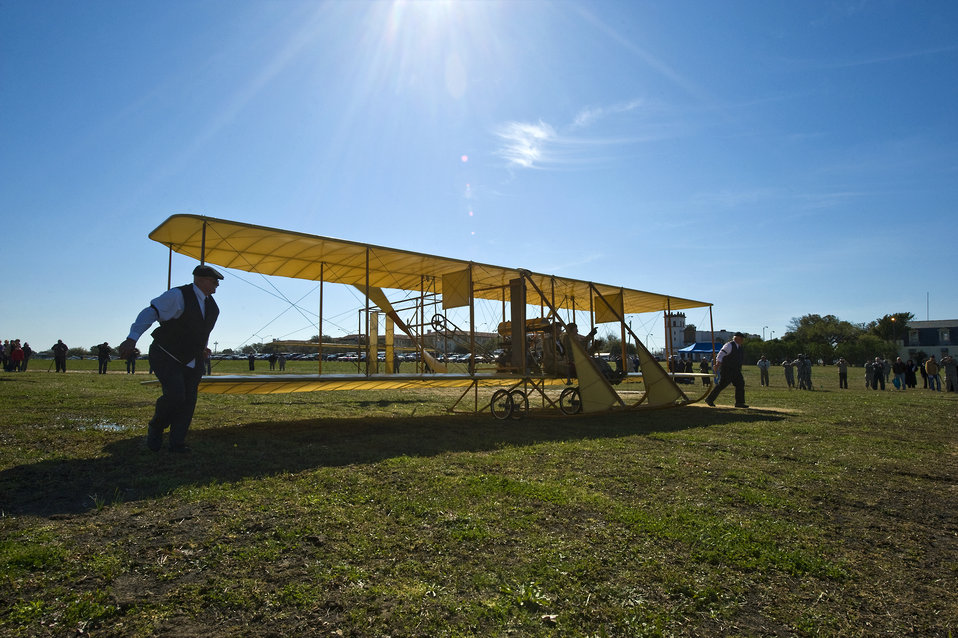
Military, civilians celebrate 100 years of military flight

Don Gum, a Wright